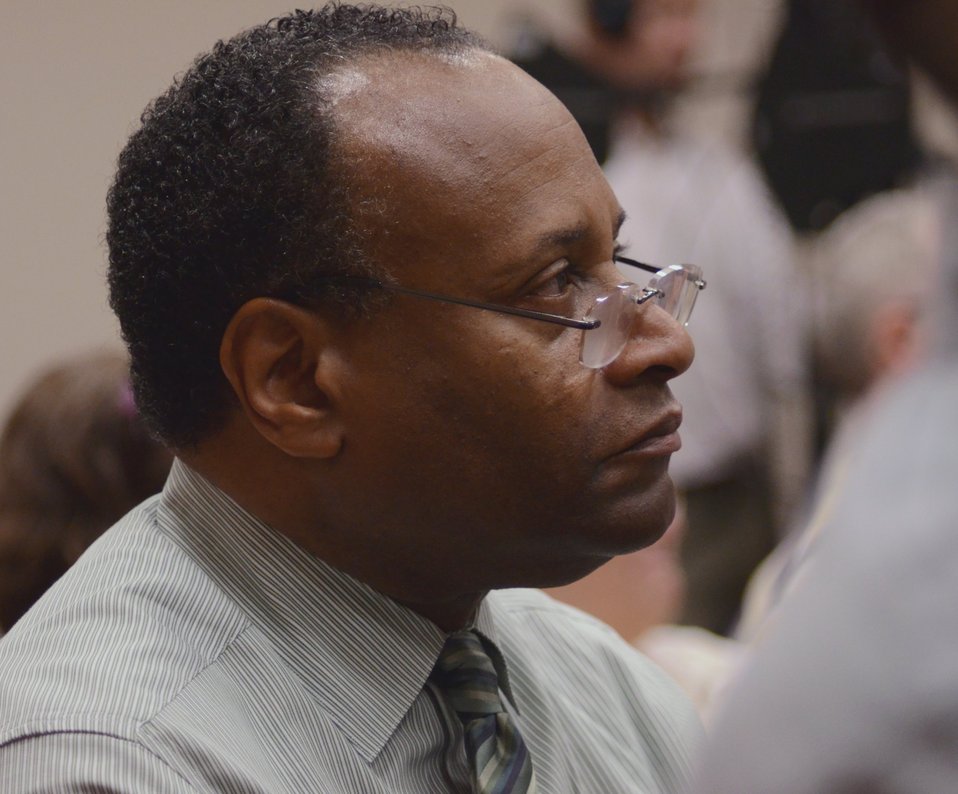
Members of the audience listen to Agriculture Secretary Tom Vilsack speaks at the White House Rural Forum at the Wisconsin State Fair, in West Allis, WI, on Thursday, August 4, 2011, to businesses and community leaders, farmers and ranchers to explore ways federal, state and local officials can work together to improve economic conditions and create jobs. The forum is part of a series of White House Rural Roundtables that are being held across the country this summer with senior Administration officials.